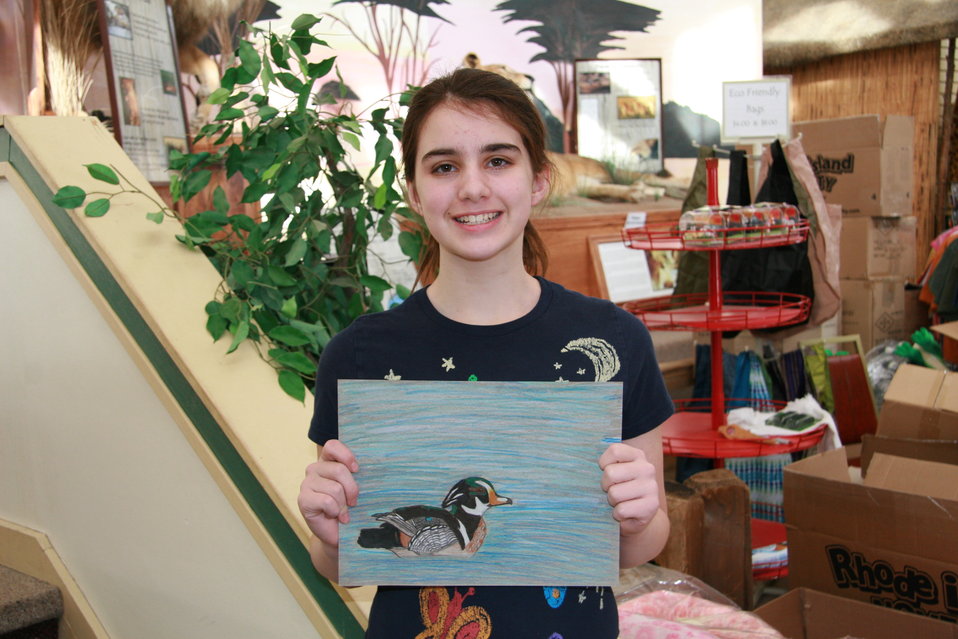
North Dakota Junior Duck Stamp

The Junior Duck Stamp is becoming a collector's item, and provides awards and incentives to students participating in the Junior Duck Stamp Program!